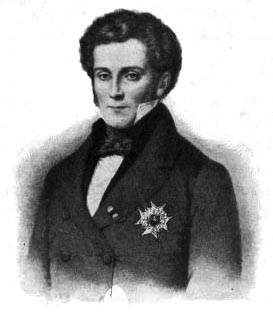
Gustaf Fredrik Åkerhielm, Swedish officer, theathre director and playwright Svenska: Gustaf Fredrik Åkerhielm, militär, teaterdirektör och pjäsförfattare